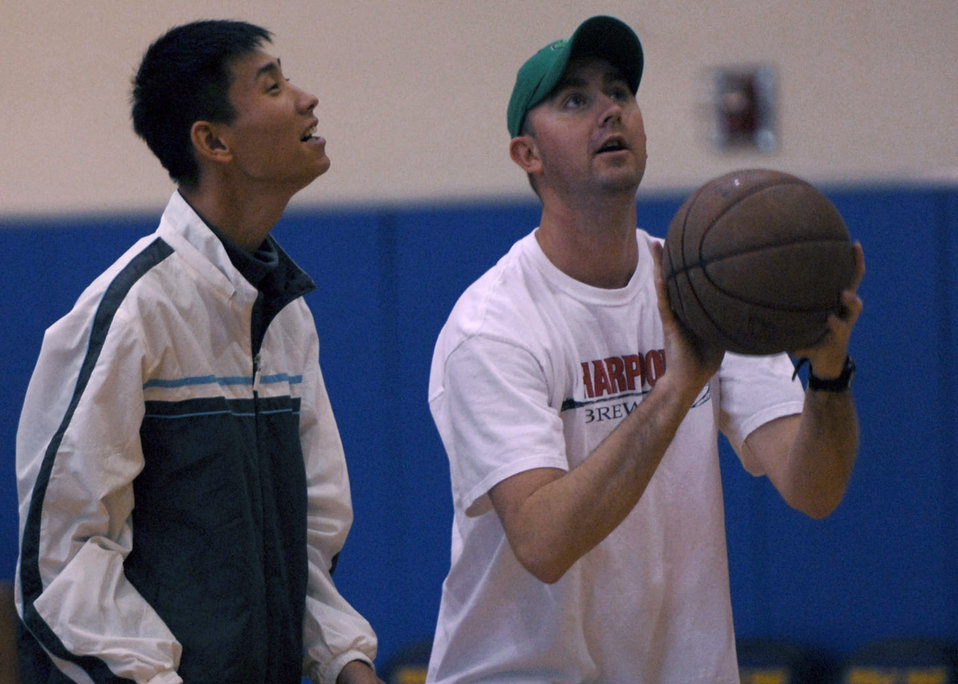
Kunsan Airmen show Thanksgiving spirit with South Koreans

1st Lt. Bill Chalmers teaches a young man how to shoot a basket at the fitness center Nov. 10 at Kunsan Air Base, South Korea. Airmen held a day of games and food for the local nationals. The good Neighbor program is designed for the base to actively engage with the local community to strengthen ties. Lieutenant Chalmers is the 8th Medical Group chief of laboratory services.